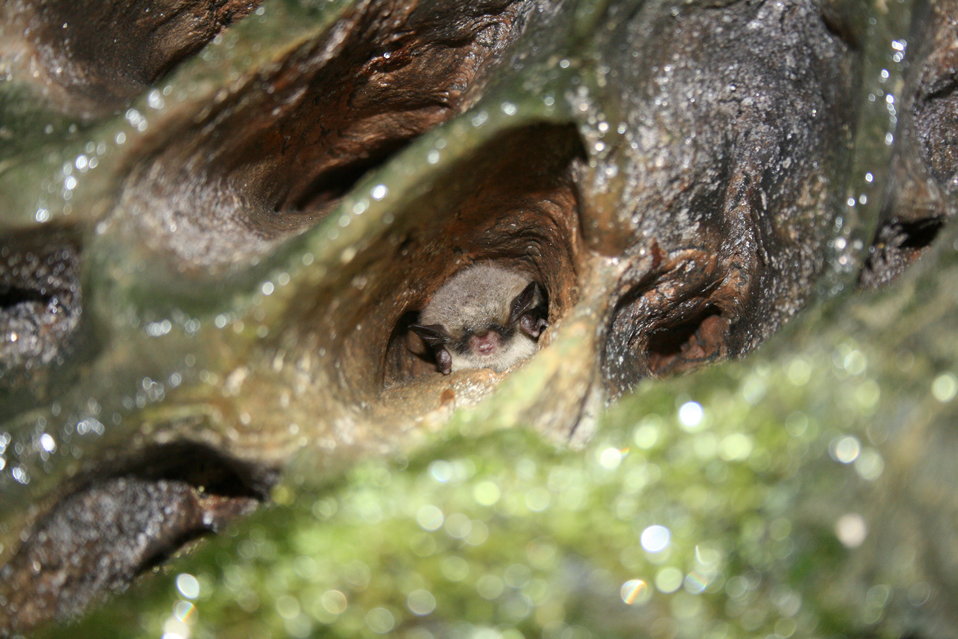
Northern long-eared bat

Myotis septentrionalis hibernating in a cave formation